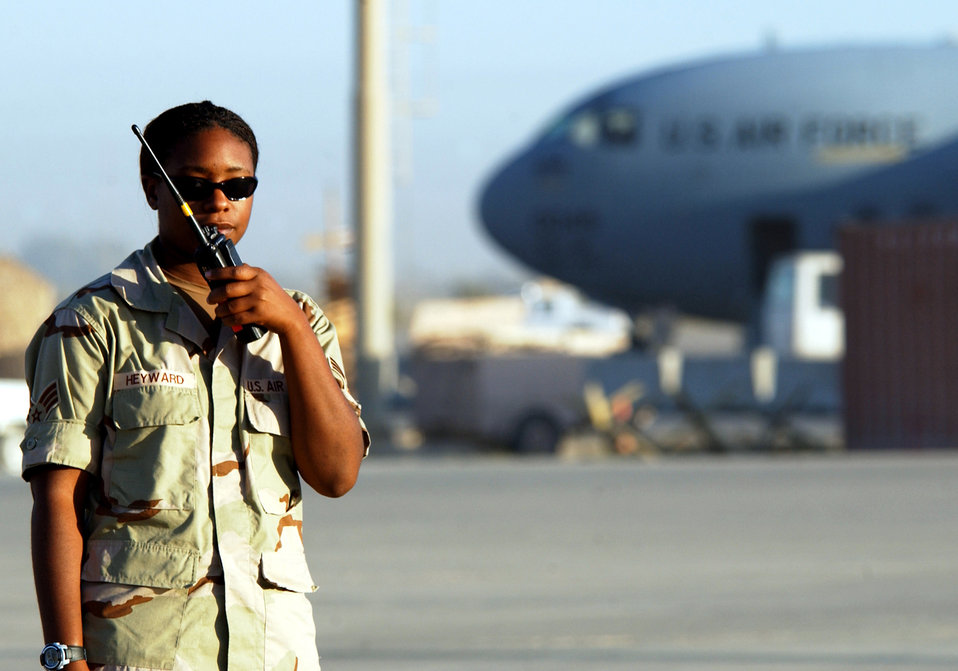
Tower talk

BAGHDAD INTERNATIONAL AIRPORT, Iraq -- Senior Airman Tevyka Heyward talks with the air traffic control tower here. She is an airfield management operator with the 447th Expeditionary Operations Support Squadron and is deployed from the 92nd Operations Support Squadron at Fairchild Air Force Base, Wash.